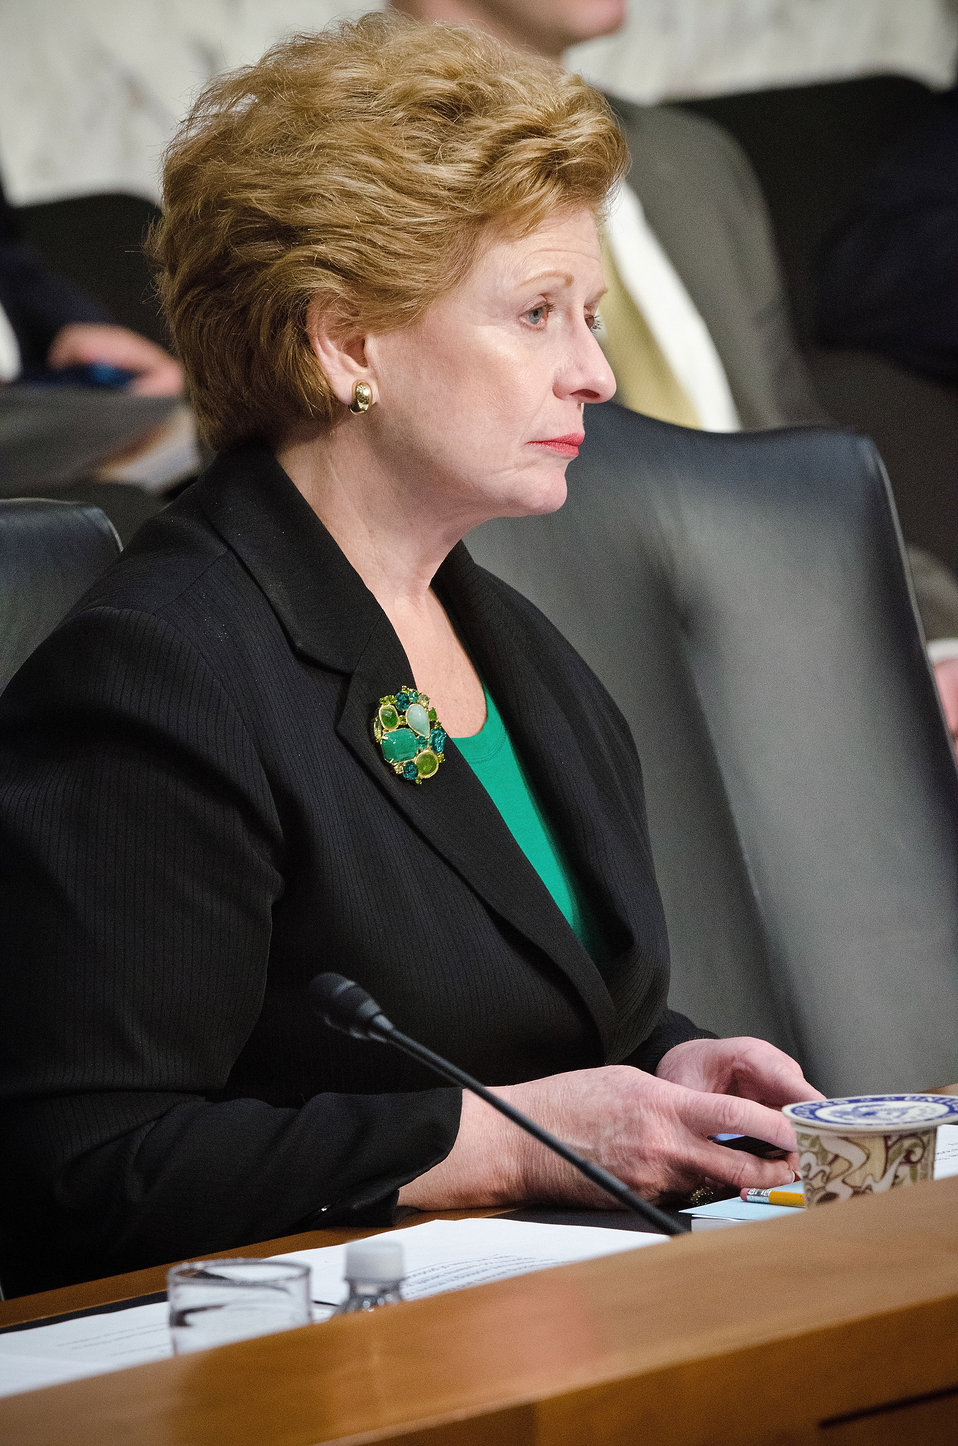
Chairwoman of the Senate Agriculture Committee Senator Debbie Stabenow (MI) listens Agriculture Secretary Tom Vilsack’s answers during Secretary Vilsack’s testimony on “Healthy Food Initiatives, Local Production and Nutrition,” on Wednesday, March 7, 2012 in Washington, D.C.